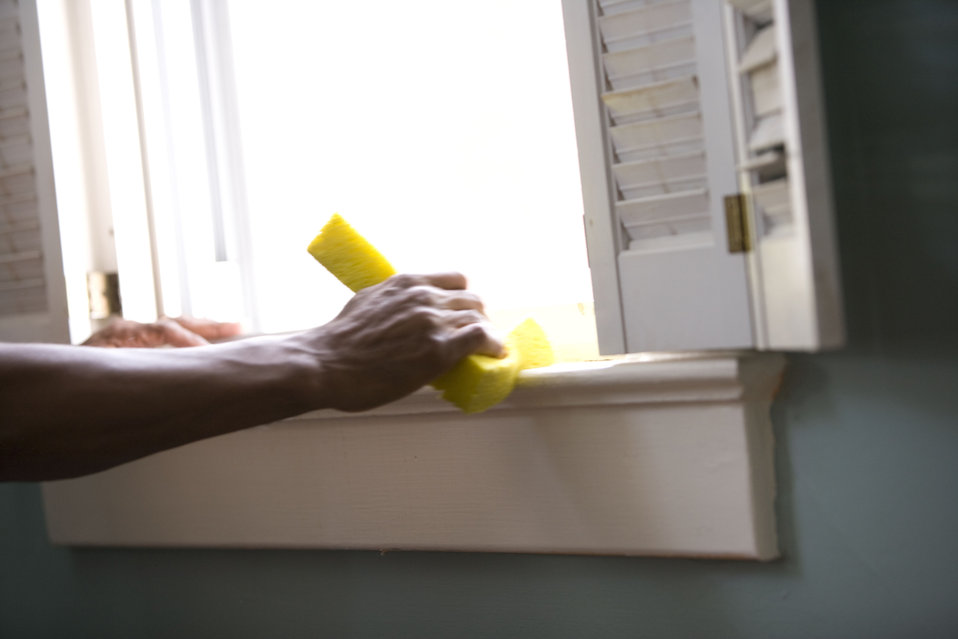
When renovating a home, you should use a damp sponge or cloth to clean dust collected on a window sill, as the dust may contain asbestos or lead-based paint. Home maintenance is an ongoing process for any homeowner, and here we see an African-American man as he was preparing a window in his home for a general cleaning.